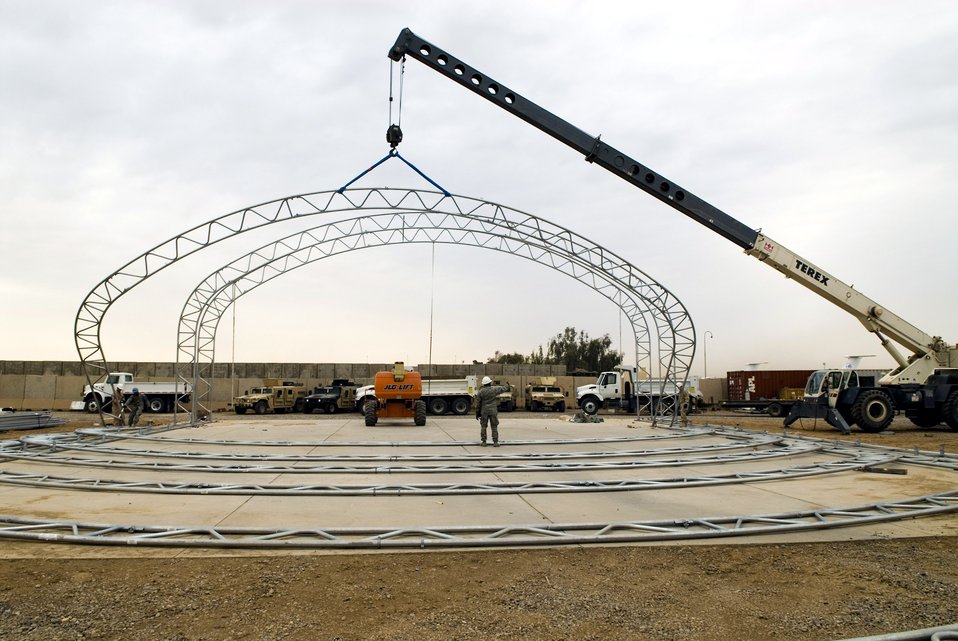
Raise the roof

Members of the 332nd Expeditionary Civil Engineer Squadron construct a temporary shelter Dec. 5 at Balad Air Base, Iraq. The shelter, which takes four days to assemble, will store vehicles for the 332nd ECES Explosive Ordnance Disposal Flight.